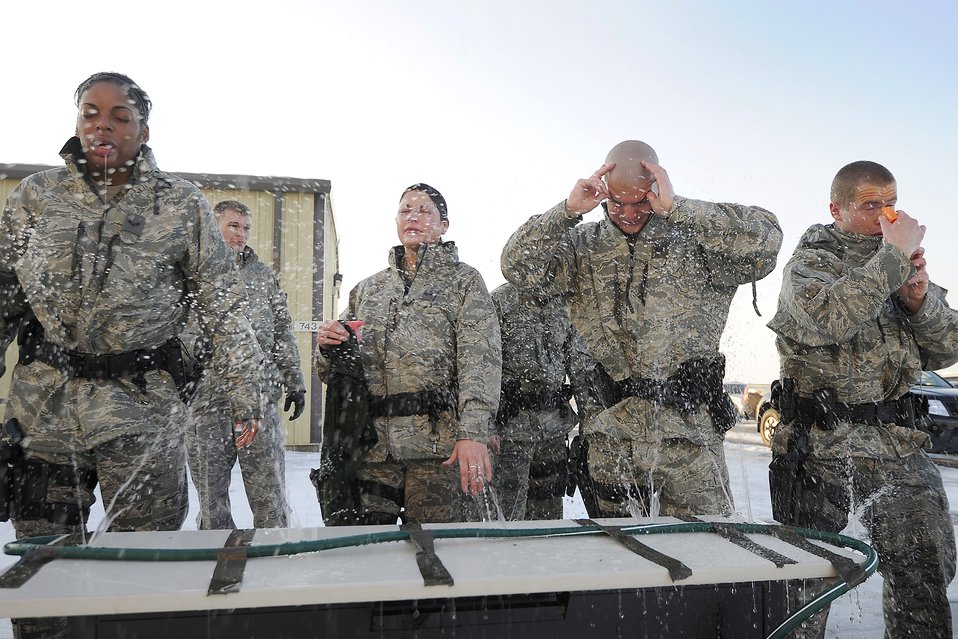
Oleoresin Capsicum spray training

Airmen from the 75th Security Forces Squadron wash off Oleoresin Capsicum Jan. 5, 2011, at Hill, Air Force Base, Utah. OC spray is a non-lethal spray, similar to pepper spray, used to temporarily incapacitate individuals. All security forces Airmen receive the OC training when they first arrive at their squadron.